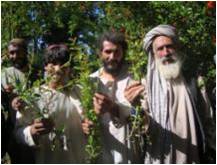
The Orchard and the Trees

Forty thousand hectares of land in Kandahar are covered with dark green fruit and nut tree orchards, a vivid contrast to the candescent sand dunes and ashen gravel plains in Kandahar. These trees date back to pre-Soviet times, when Afghanistan contributed 65 percent of the world’s dried fruit and nut exports. Over the decades of war in this area, however, many of the trees were burnt down or cut for fuel. Today, many of the remaining trees have grown old, while the know-ledge of tree care, handed down from one generation to another, has grown old too, or vanished altogether.
These days, attending to one’s fruit trees is a risk. The Taliban often use the orchards as hideouts and shelters for setting up ambushes. Farmers, nevertheless, take this risk willingly and have even accepted the assistance of the USAID-funded Afghanistan Vouchers for In-creased Production in Agriculture Plus (AVIPA Plus) program to im-prove their traditional source of income.
In early 2010, AVIPA Plus funded the pruning and cleaning of more than 6,600 hectares of existing orchards in Arghandab, the most pro-lific pomegranate producing area in Kandahar. Selected by village shuras, 12,000 local farmers were trained in the proper cleaning and pruning methods that are now being used in the village orchards.
Listening to the needs of the communities, and in collaboration with the Afghan government, the program initiated a massive three-week tree planting project leading up to the Afghan New Year on March 21. More than 600,000 pomegranate, plum, and apricot saplings and 200,000 grape vines were planted on the same 6,600 hectares of pre-viously cleaned and pruned orchards to replace old trees and to in-crease the density of the orchards. Another 200 hectares of new vineyards will be planted with 200,000 vine cuttings in May. In addi-tion, to counter an aphid infestation, the program designed and is implementing an eco-friendly pest management program offering training, wages, equipment, and supplies to more than 7,300 workers to date.
Khudai Nazar, an orchard owner from the village of Ali Kallev, has four hectares of pomegranates, apricots, and plums. He participated in the pruning, sapling transplantation, and spraying – all three seg-ments of the orchard management project. He has noticed that his fruit is a third larger than usual and he believes this year’s harvest will be bountiful. Having lived all his life in these war-torn areas, he sees both the proverbial forest, or rather orchard, and the trees: “We have a good relationship with our government now, since people have jobs through AVIPA’s assistance, instead of joining the insurgency.”
In Afghanistan, the work of peace is similar to nurturing a tree. It is a process that takes time, and it must have good roots, good seed, and the hand of an honest farmer to plant it and care for it.